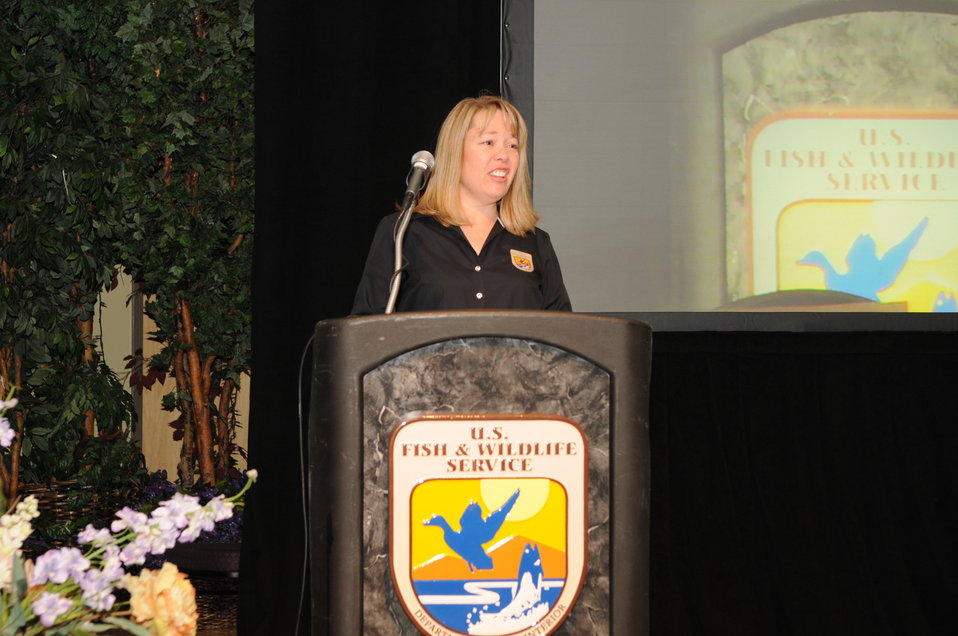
Opening Remarks

The U.S. Fish & Wildlife Service sponsored the 2012 Federal Duck Stamp Art Contest September 28 and 29 in Ogden, Utah, at Weber State University. A panel of five judges was responsible for choosing the art work used to design the 2013-2014 Migratory Bird Hunting and Conservation Stamp.